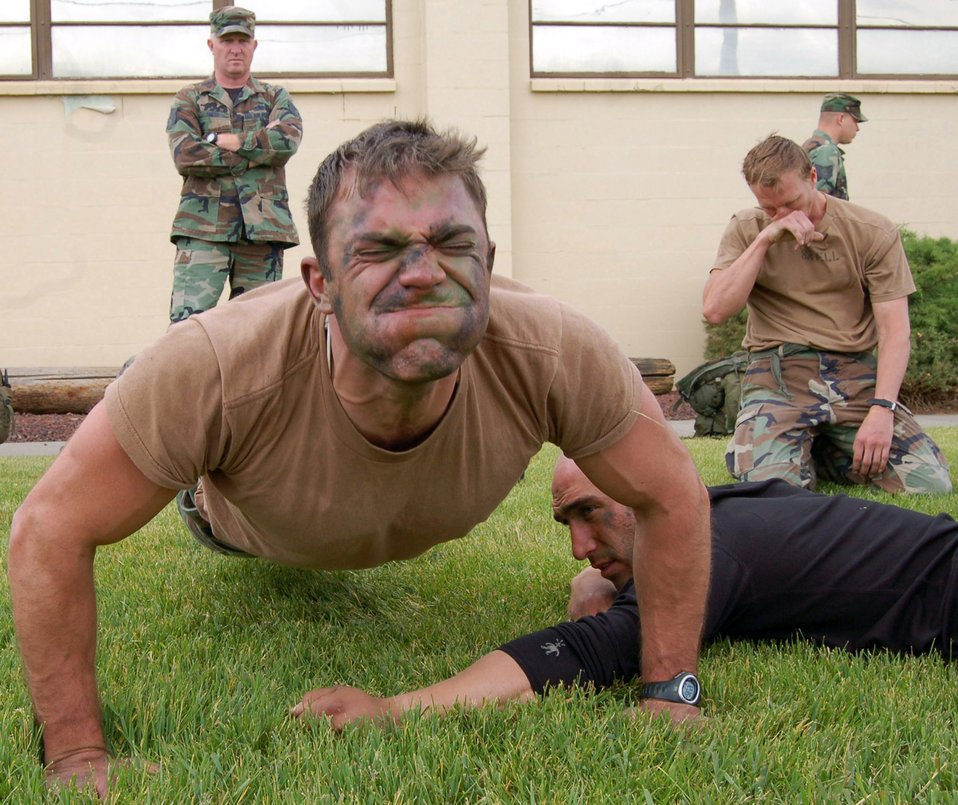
Ready for the challenge

Staff Sgt. Matthew Zimmer pumps out as many push-ups as he can during the physical fitness portion of the Survival, Evasion, Resistance and Escape Challenge at Fairchild Air Force Base, Wash. The participants in the challenge include SERE specialists, combat rescue officers and pararescuemen.